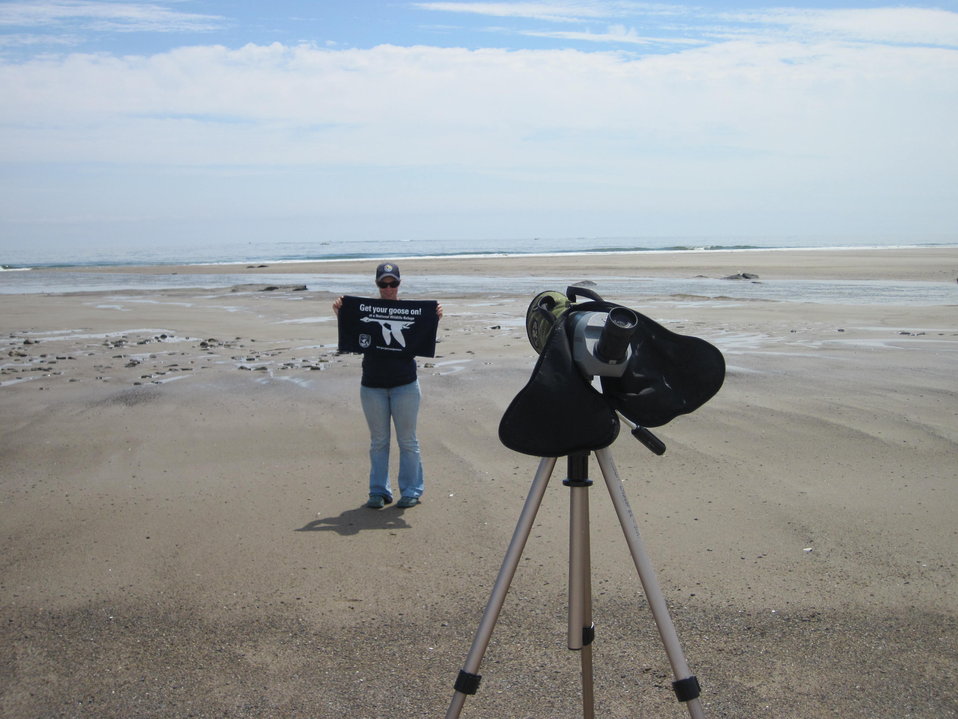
Get Your Goose On!

Intern Bri Rudinsky with the spotting scope.